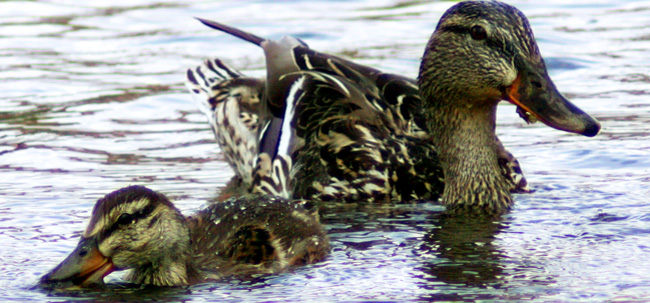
Mallard hen and duckling